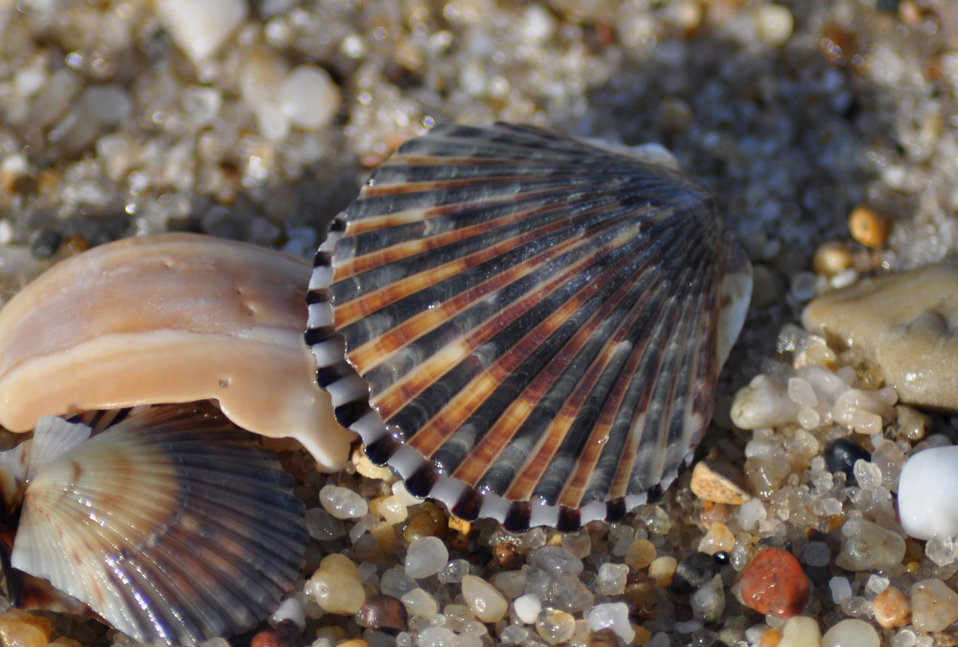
scallops washed ashore

Nantucket National Wildlife Refuge